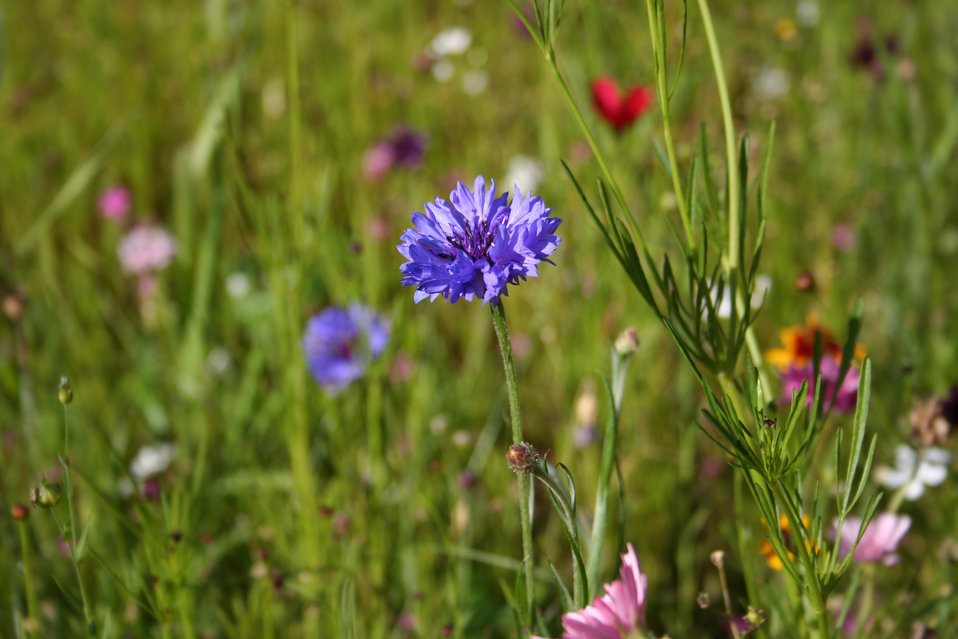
Flowers

Autumn flowers.